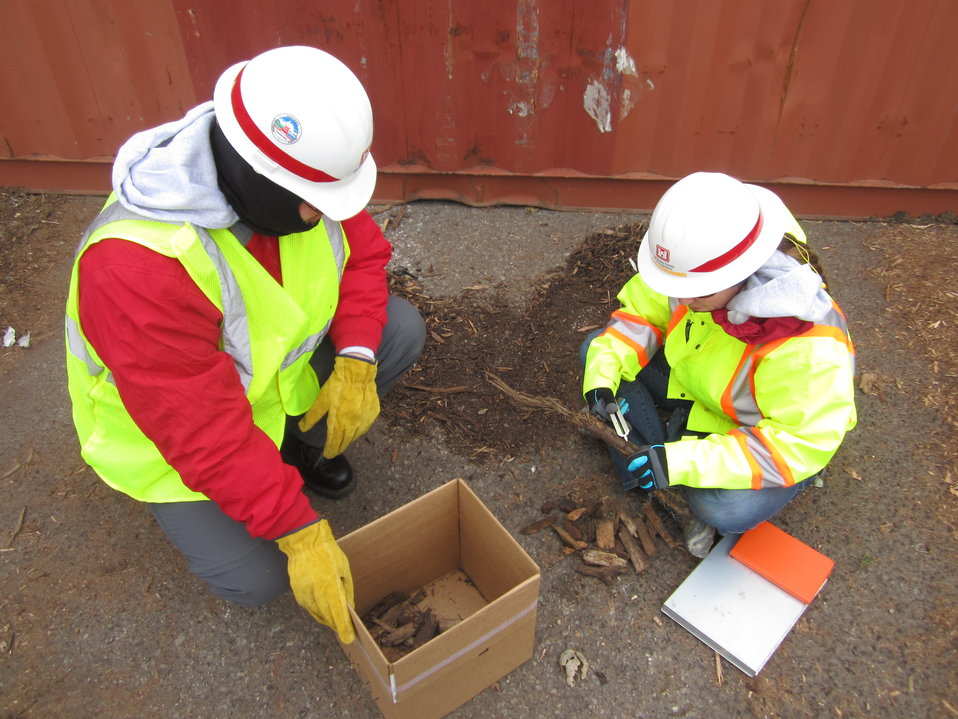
Sacramento District responds to Sandy

The Sacramento District's Jamie Robb (left) and Coralie Wilhite measure samples of vegetative debris at Floyd Bennett Field in Queens, NY, Nov. 24, 2012. Trees and shrubs destroyed by Sandy are ground up for reuse or disposal. The wood chips are often made available as mulch for landscaping, but sometimes must be discarded if there's a risk that they're infested with an invasive species. The Asian longhorn beetle is a threat in this part of the country. Robb and Wilhite are taking samples to make sure the chips are generally being ground down to less than an inch. Chips larger than that increase the risk of carrying the beetle.